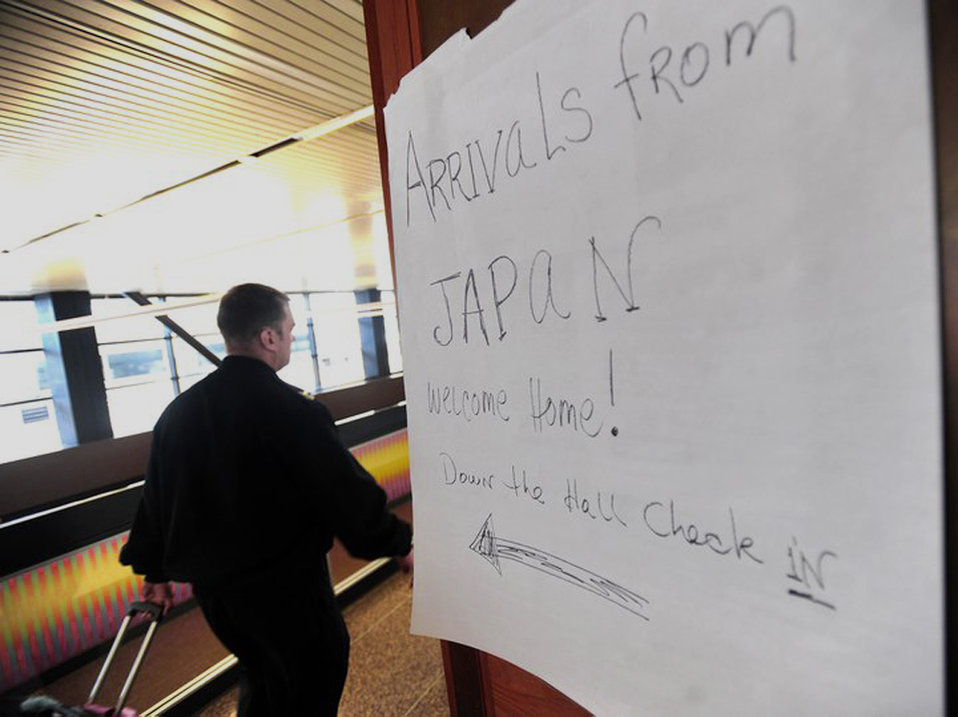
Departure from Japan

Service members and family members from Japan are directed March 19, 2011, to the USO at the Seattle-Tacoma International Airport, Wash. More than 230 Department of Defense personnel and family members landed there after leaving Japan.